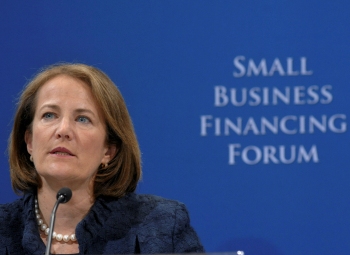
Treasury and SBA Host a Small Business Financing Forum

Administrator Mills addressed the forum at the closing session.